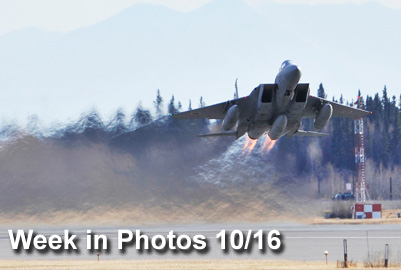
Week in Photos 10/16

Air Force Week in Photos for Oct. 16 highlights photos from around the Air Force. In this photo by Staff Sgt. Christopher Boitz, an F-15 from the Japan Air Self-Defense Force takes to the sky during Red Flag-Alaska, Oct. 9, 2009, at Eielson Air Force Base, Alaska.